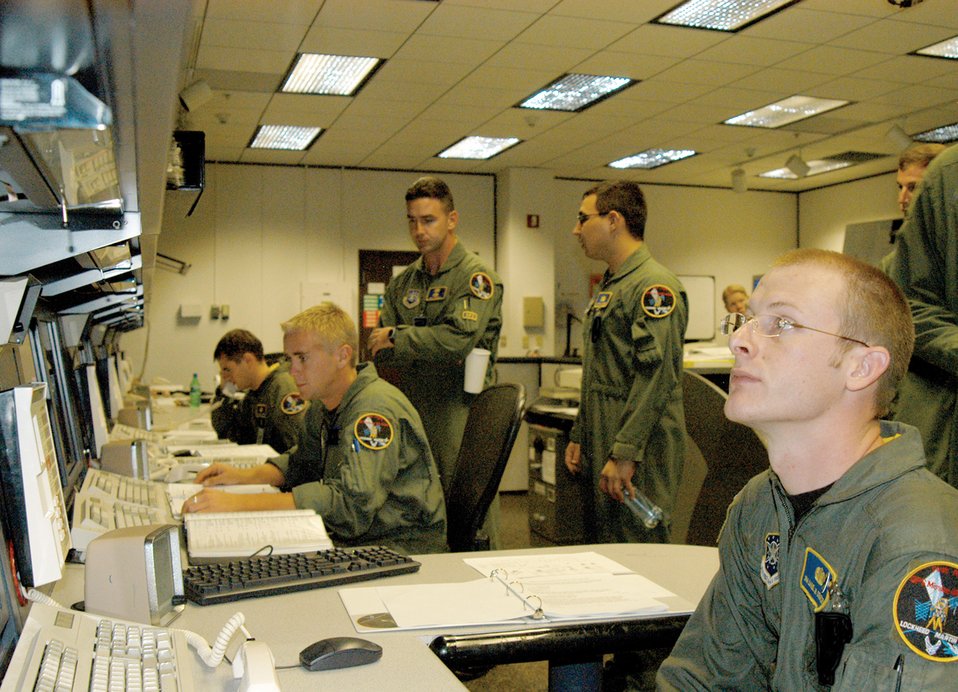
1st SOPS helps lift new satellite

First Space Operations Squadron satellite systems operators Airman 1st Class Joshua Shepherd, Airman 1st Class Andrew Ode, and Senior Airman Daniel Dempsey monitor takeoff and early orbit operations for the Global Positioning System IIR-14 (M) satellite that launched from Cape Canaveral Air Force Station, Fla., in September, 2005.